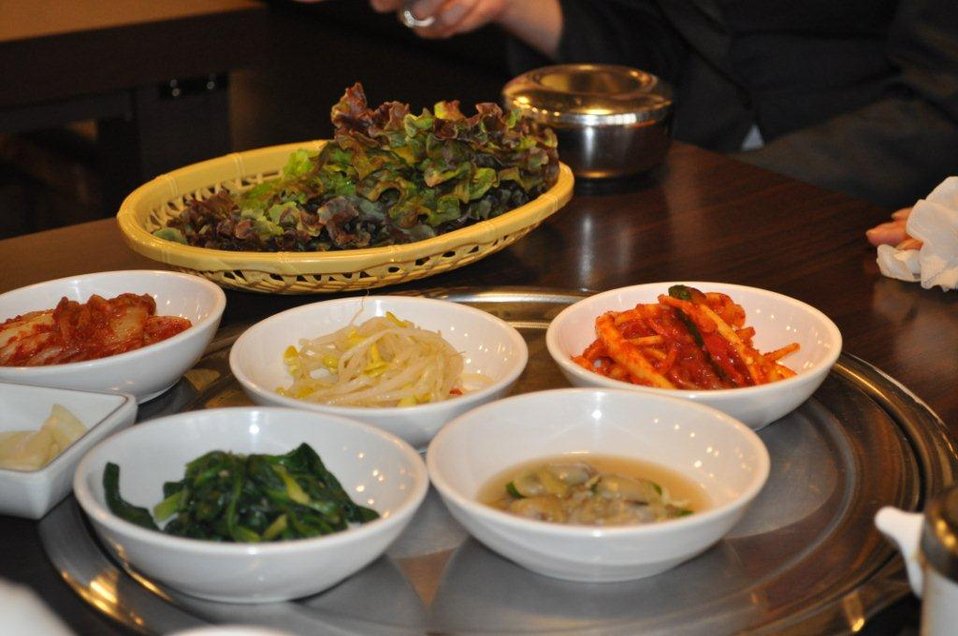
Geithner visit to Asia, November 4-12, 2010

A few of the treats we found at a Seoul restaurant known for its Bibimbap - a popular Korean dish (Seoul, South Korea)